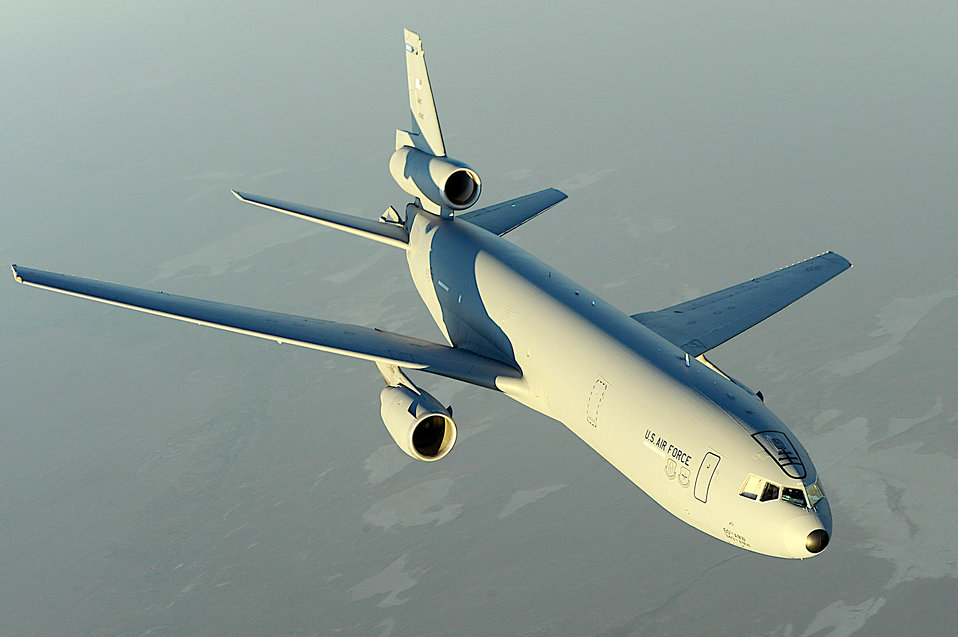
Fuel for fighters

A KC-10 Extender from the 908th Expeditionary Aerial Refueling Squadron flies over Afghanistan on Dec. 11. Using either an advanced aerial refueling boom, or a hose and drogue centerline refueling system, the KC-10 can refuel a wide variety of U.S. and allied military aircraft within the same mission.